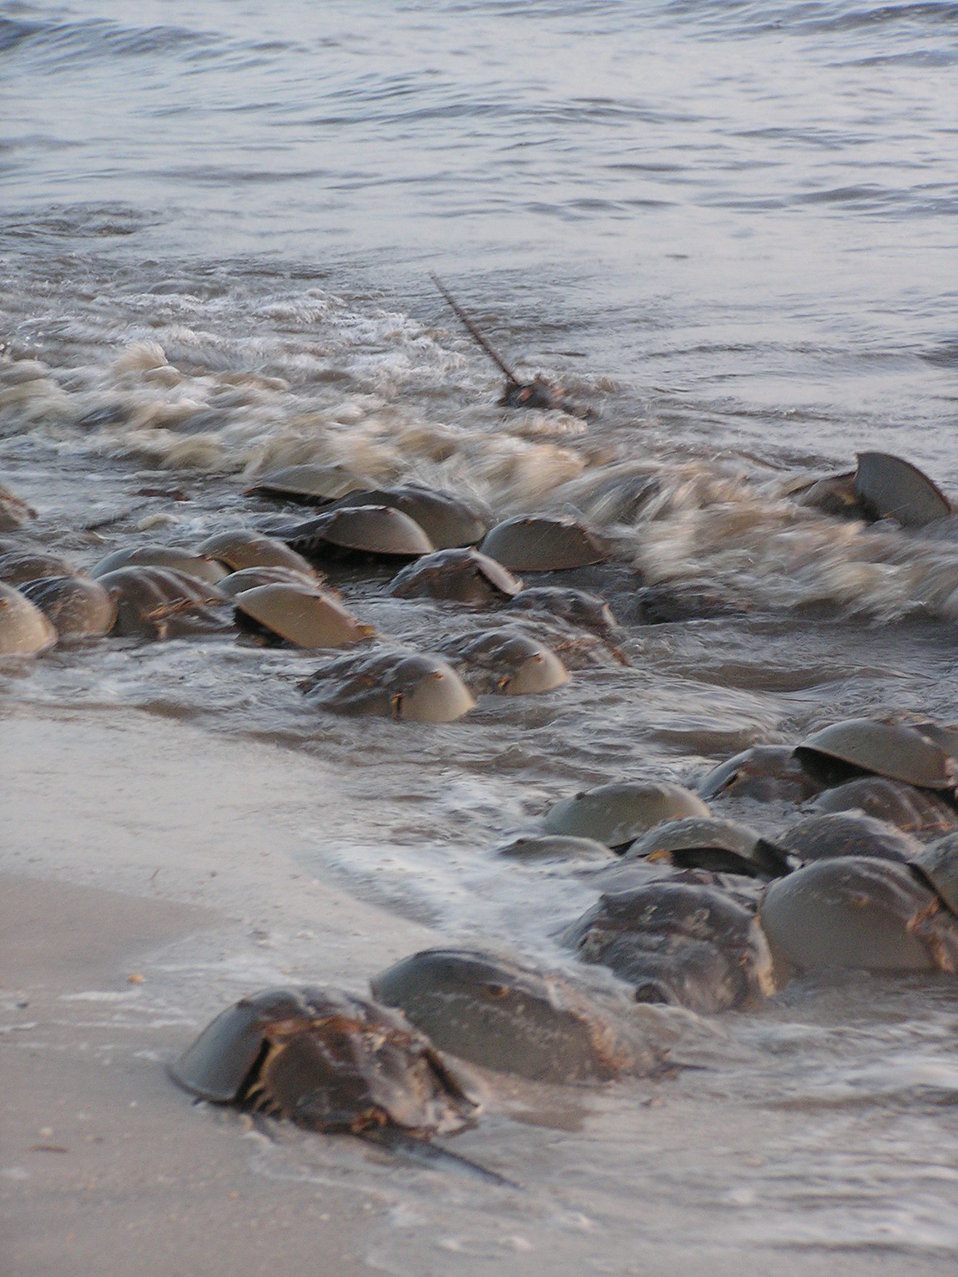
Horseshoe crabs at Cape May National Wildlife Refuge.